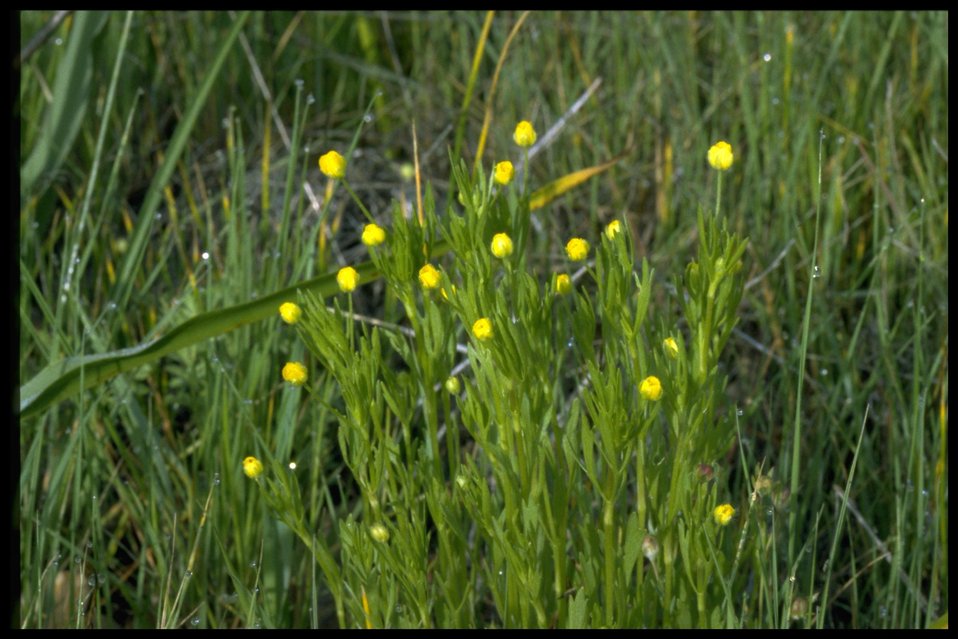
Medium shot of Ranunculus sp.